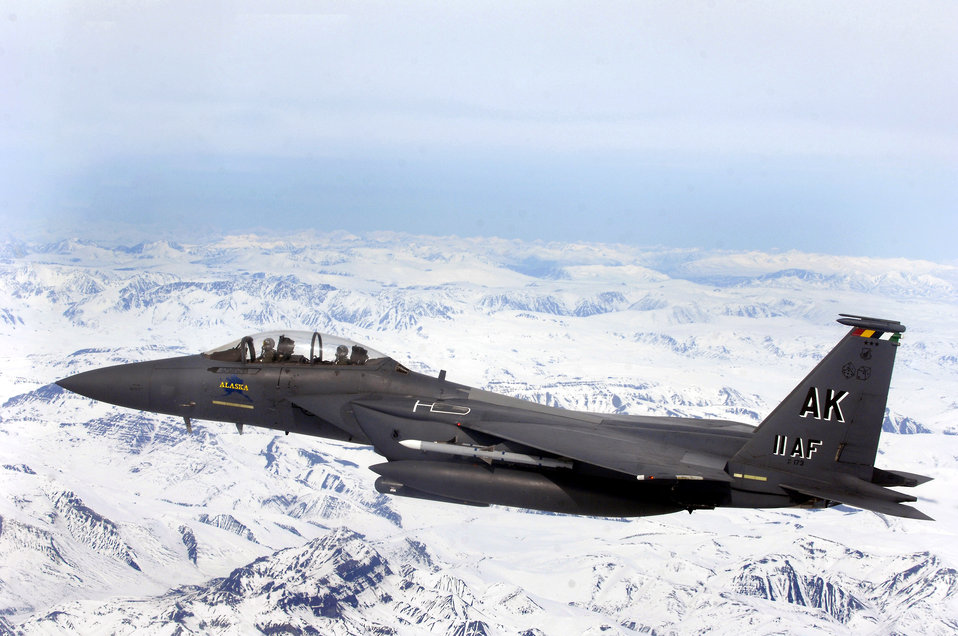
Alaskan Eagles

An F-15E Strike Eagle flys over glacial fields during a training mission April 20 over Alaska. The F-15E is assigned to the 90th Fighter Squadron at Elmendorf Air Force Base, Alaska, which traces its history back to August 1917. The F-15E at Elmendorf AFB will soon be replaced by the F-22 Raptor.